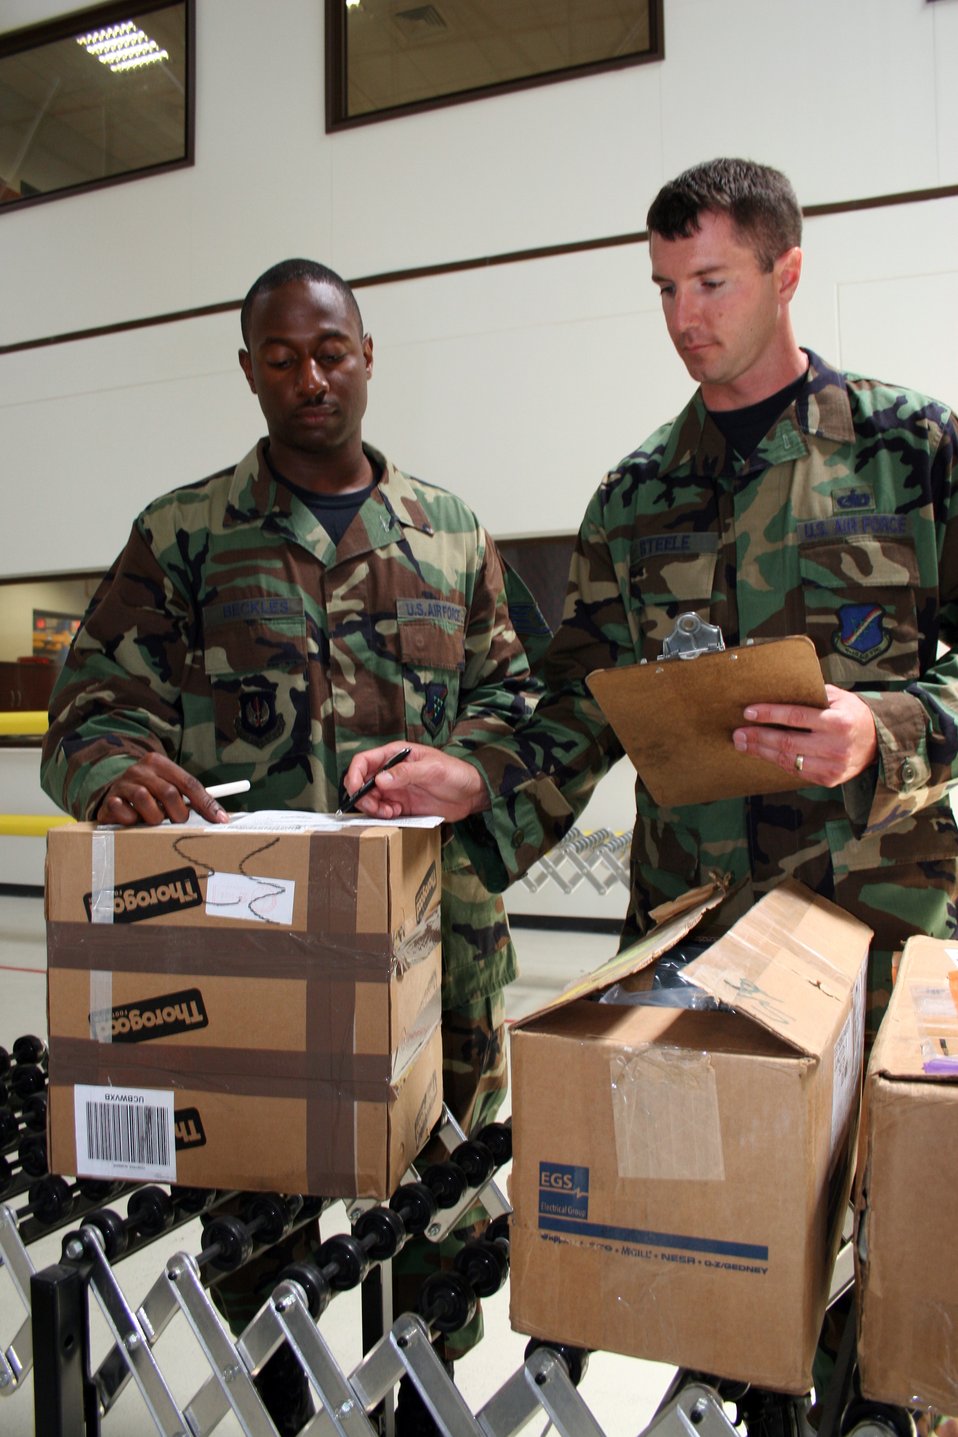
AFSO 21 streamlines logistics processes

Staff Sgt. Raja Beckles (left) and Tech. Sgt. Chad Steele inventory items at the 39th Logistics Readiness Squadron at Incirlik Air Base, Turkey, on Wednesday, June 21.